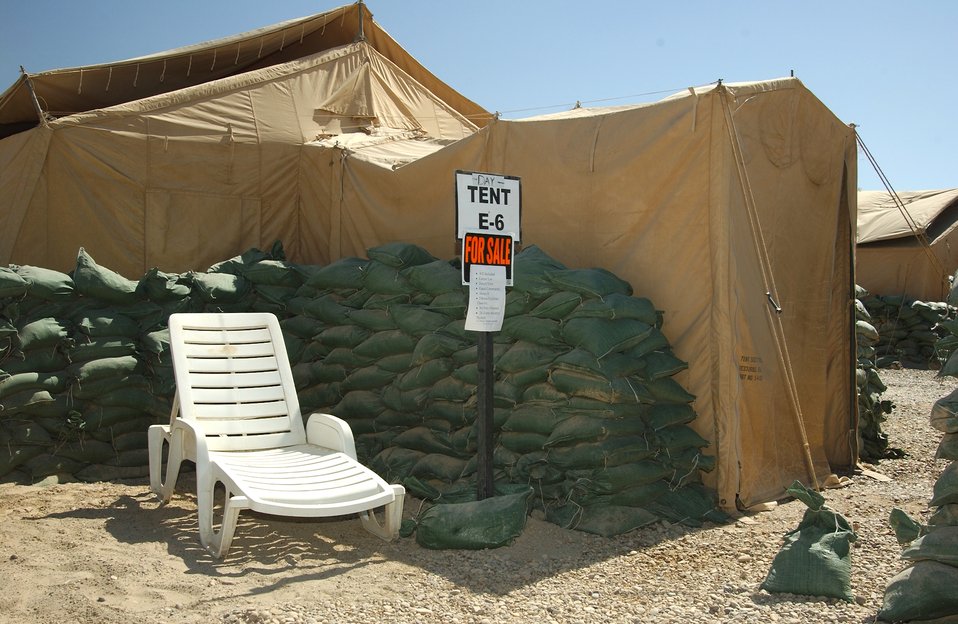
Property for sale

BALAD AIR BASE, Iraq -- In an attempt at a little humor a